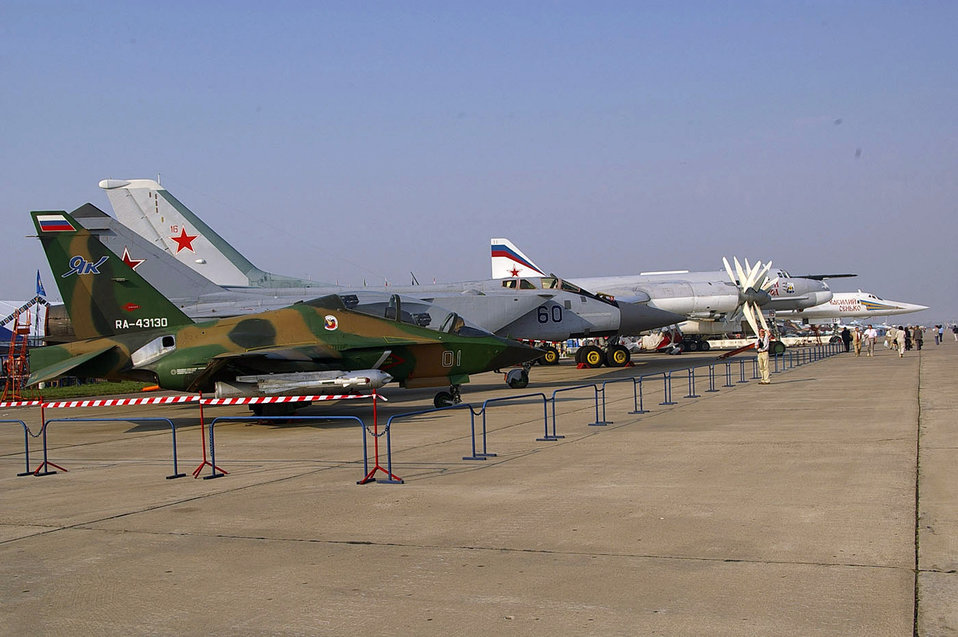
Airmen participate in Moscow International Air Show

Aircraft from all over the world are on display at the Moscow International Air Show through Aug. 26 at Ramenskoye Airfield in Zhukovsky, Russia. The show includes Department of Defense participation of static displays and aerial flight demonstrations. The air show is one of the premier events of its type in the world. About 65 Airmen from bases worldwide are participating in this year's air show.